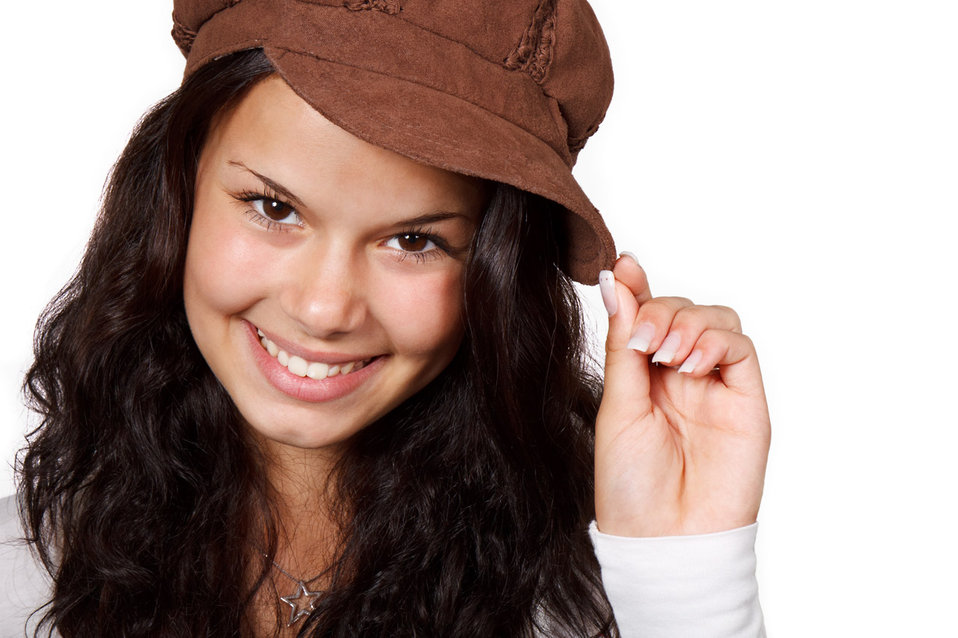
Smiling woman with hat

Young positive smiling woman wearing a brown hat isolated on white background.